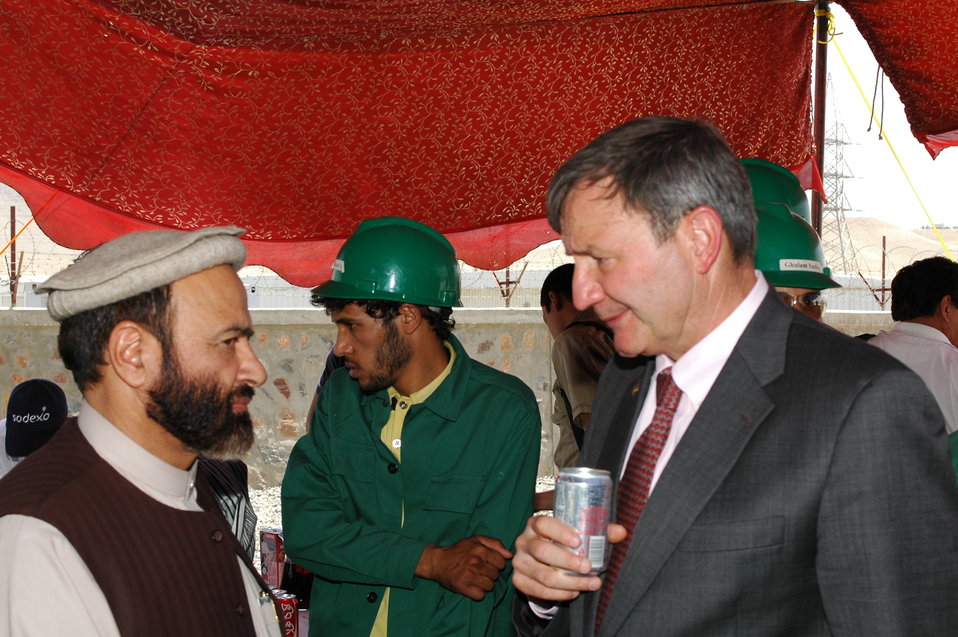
105 MW Tarakhil Power Plant Handover